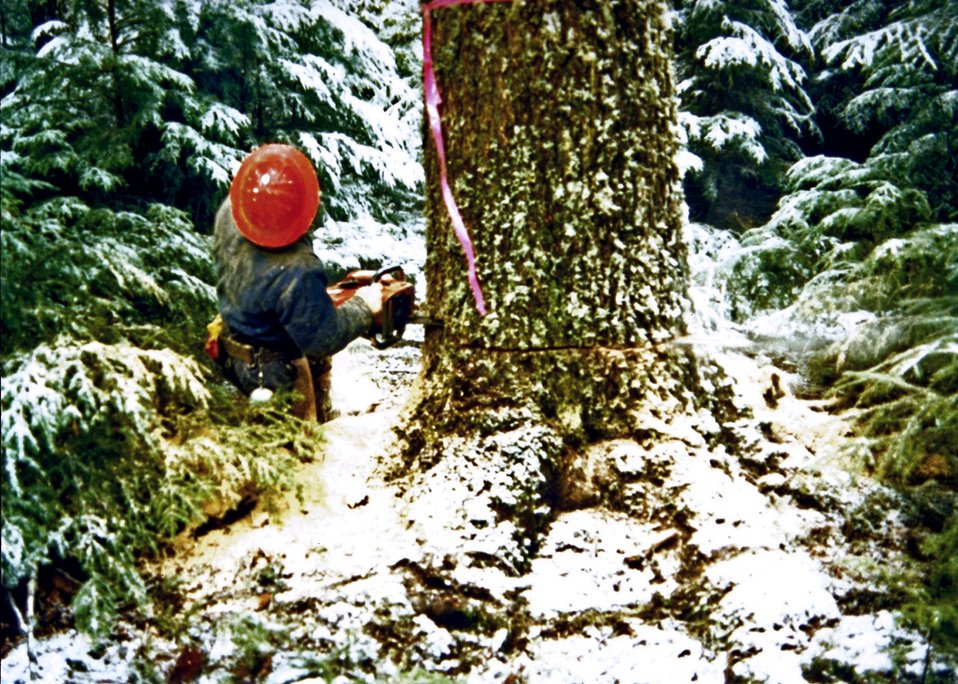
3-P Fallers at Buyer's Deadhorse Timber Sale.